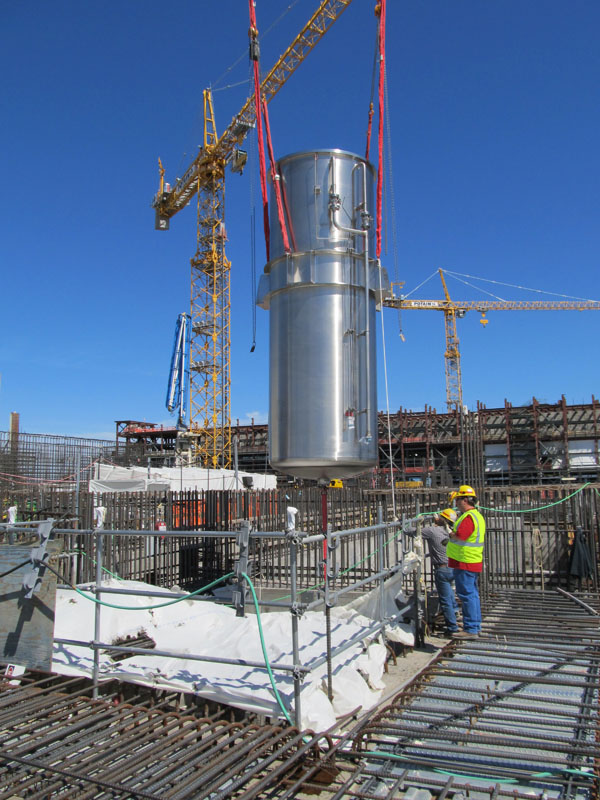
A canister decontamination system vessel is crane-lifted into the High-Level Waste Facility